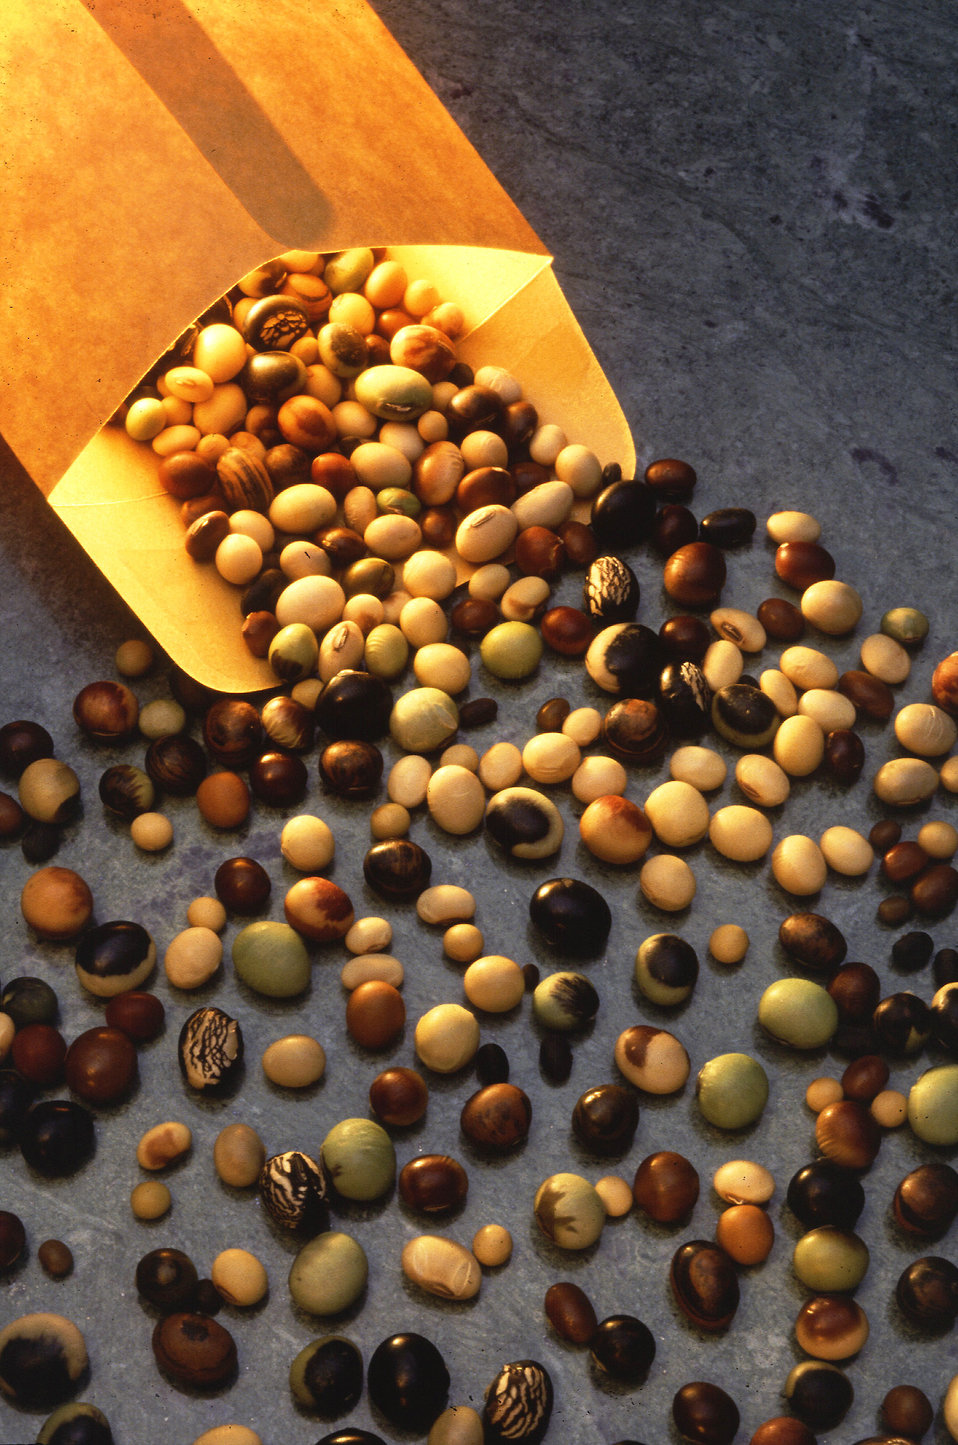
These soybean seeds, from the National Soybean Germplasm Collection housed at Urbana, IL show a wide range of colors, sizes, and shapes.